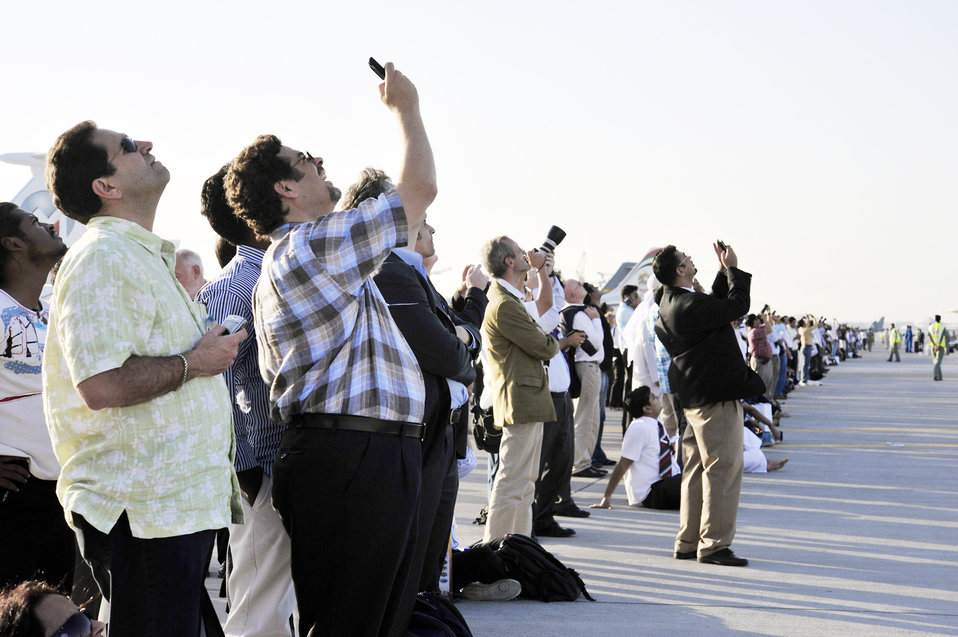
Dubai Air Show

Air show patrons watch the F-22 Raptor fly an aerial demonstration Nov. 15, 2009 at the Dubai Air Show in the United Arab Emirates. The F-22 flew over the Dubai International Airport four times during the week of the air show.